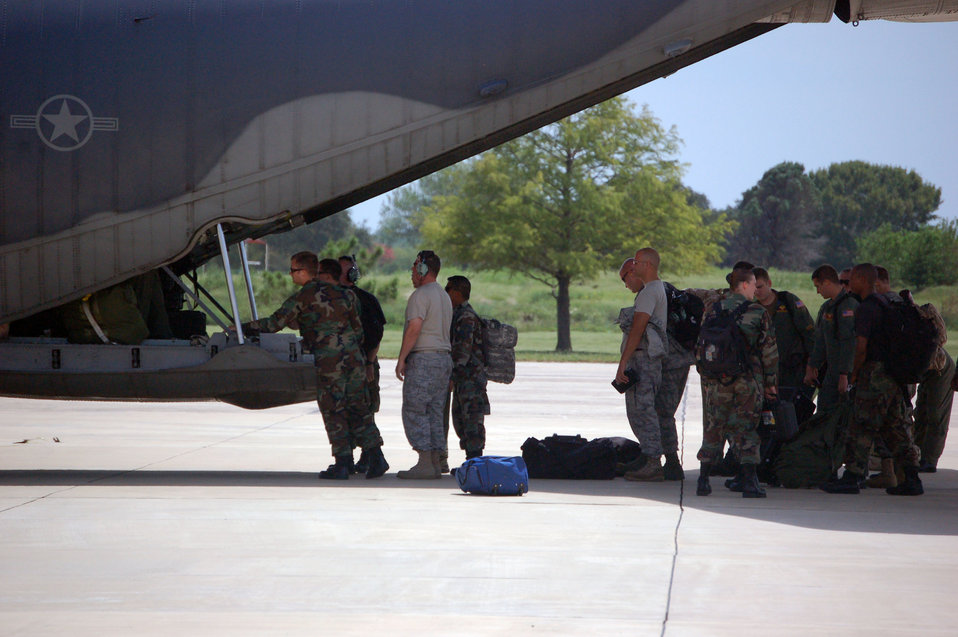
Hurricane Ike support

Members of the 331st Air Expeditionary Group unload a C-130 Hercules after landing at Randolph Air Force Base, Texas, Sept. 12. The group, made up of search and rescue personnel and other units from across the Air Force, was staging at the base to provide support in the aftermath of Hurricane Ike.